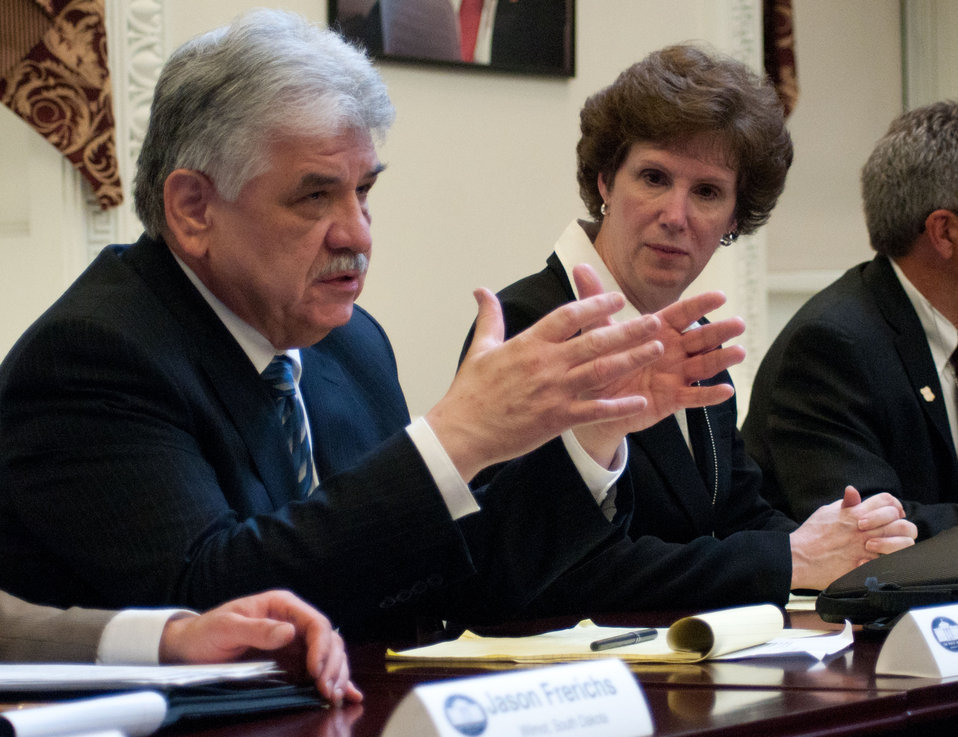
Roland Arriola, Texas Valley Communities Foundation, TX, attended a meeting at the White House, in Washington, DC, on July 6, 2011. He was asked to participate along with President Barack Obama, Agriculture Secretary Tom Vilsack, the President's Domestic Policy Adviser Melody Barnes and rural communities leaders from across the country for the White House Rural Champions of Change event to strengthen rural communities and promote economic growth. He formed the Texas Valley Communities Foundation, a non-profit, 501(c)3 tax exempt organization designed to provide funding and support to grass roots organizations in South Texas seeking to develop and implement effective college readiness outreach programs for Hispanics and at-risk students. Through his efforts, and with the help from grants from the Bill & Melinda Gates Foundation, the Ford Motor Company Fund, Meadows Foundation, and the Houston Endowment, Dr. Arriola's foundation and its partner grass roots organizations have created the Engaging Communities for College Readiness (ENCORE) program. During the last three years, ENCORE has worked with more than 30 local school districts in South Texas and provided college readiness mentoring to more than 4,800 Hispanic and at-risk middle school and high school students. Prior to his retirement, Dr. Arriola was named as one of the Top 50 Most Important Hispanics in Business and Technology for his leadership role in establishing the National Hispanic Engineering, Science and Technology (HESTEC) Conference, an event held every year during Hispanic Heritage Month. HESTEC, now in its tenth year, attracts more than 50,000 parents, teachers, administrators and students to its week-long celebration of science, technology, engineering, and math initiatives. Major private sector corporations in the energy, chemical, and manufacturing arena are sponsors for this initiative.